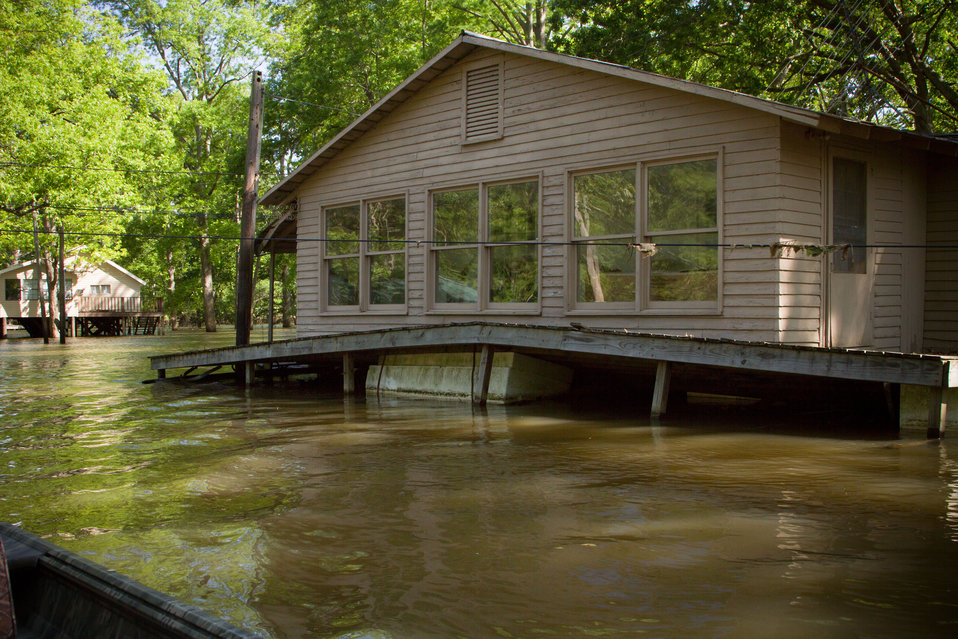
Homes in the Lauderdale County river basin or “Below the Bluffs,” in TN, on Saturday, May 21, 2011, are constructed either on stilts; or float on Styrofoam blocks and are tethered to stationary poles. Most but not all homes on floats survived well, but needed extensions (rusted bare metal section on top of poles) welded to the original poles before the rivers crested. The Mississippi and two other rivers border Lauderdale County on three sides. There are approximately 300 homes in the county's river basin. This area is near Open Lake.